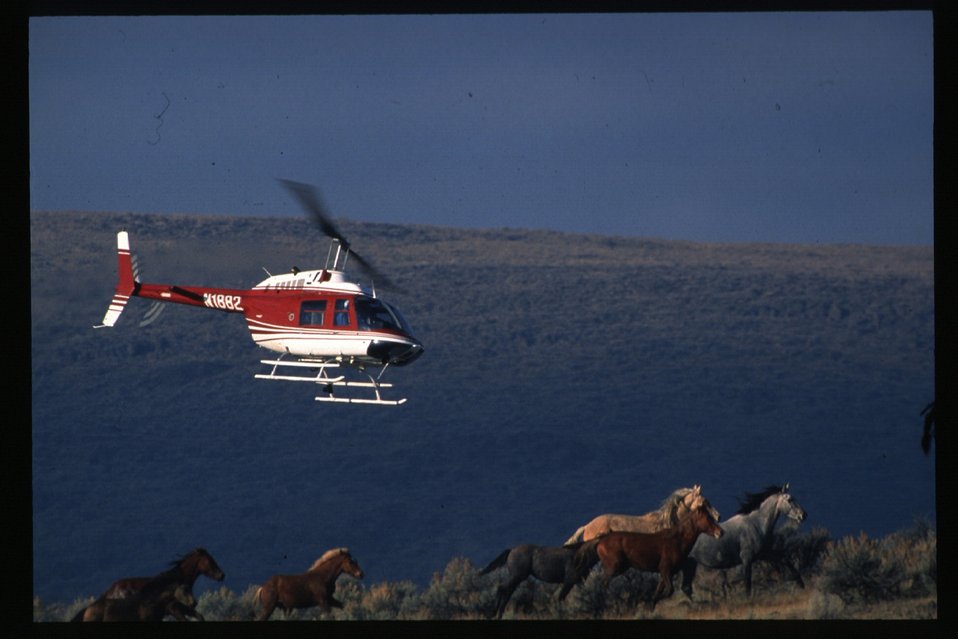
Wild horse and burro Corral roundup WHB LSRD Lower Snake River District